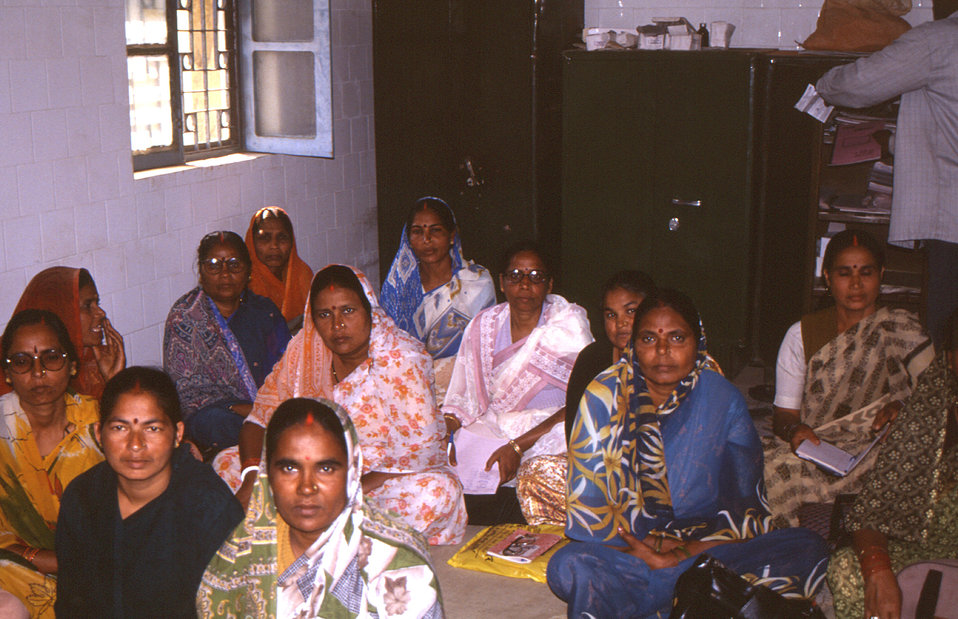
These health care workers were attending a training session that had been hosted by Stop Transmission of Polio (STOP) team members, and the district's public health practitioners. The objective was to train these participants as to the protocols associated with Indian's polio immunization program.'The first STOP Team consisted mostly of Centers for Disease Control (CDC) staff members who were U.S. citizens, i.e., 22 of 25 team members. Over time, there has been a steadily increasing involvement by citizens from the world community. It is now a truly global effort with STOP Team members reflecting the international commitment to polio eradication. International bridges are being built and global connections made among public health professionals through the STOP Team initiative that will continue long after the polio virus is gone.'